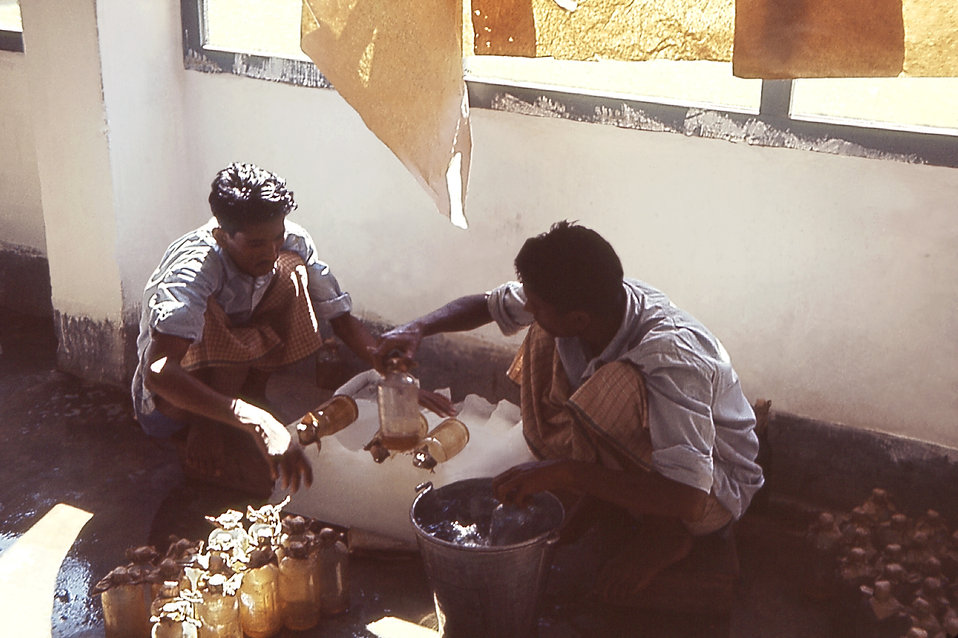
This 1964 photograph was captured during the process of producing smallpox vaccine in a West Pakistan vaccine laboratory.